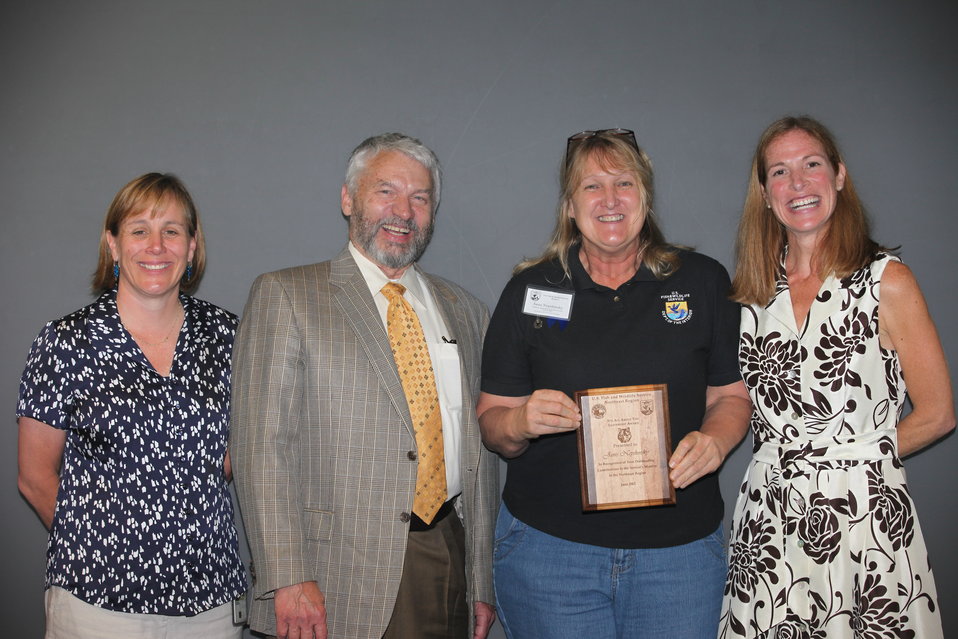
Janis Nepshinsky of the Rhode Island National Wildlife Refuge Complex was awarded a Special Eagle Award.
From left to right: Deputy Regional Director Deb Rocque, Deputy Director Rowan Gould, Janis Nepshinsky and Regional Director Wendi Weber